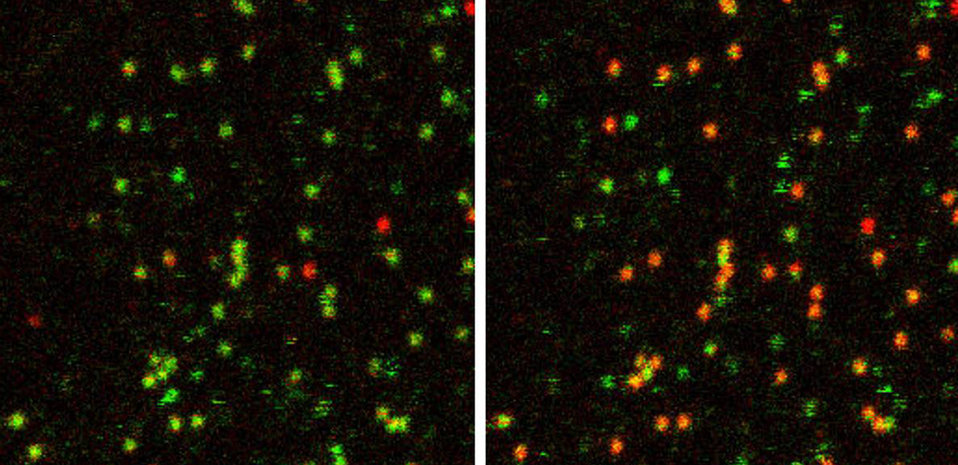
JILA Study of RNA Dynamics May Help in Drug Design

These false-color images show the behavior of about 30 to 40 single RNA molecules tagged with fluorescent dyes in the absence of magnesium (left) and with high magnesium concentrations (right). Green indicates that the tagged molecules are farther apart (undocked) whereas red indicates they are closer together (docked), showing that magnesium promotes docking.